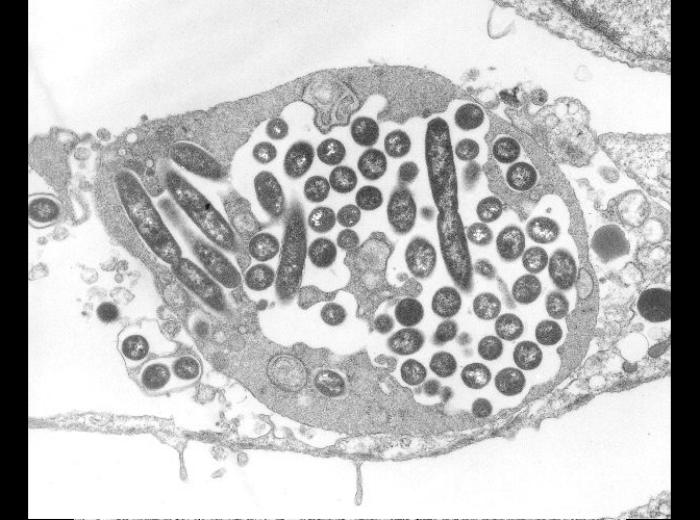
Legionella pneumophila multiplying inside a cultured human lung fibroblast.